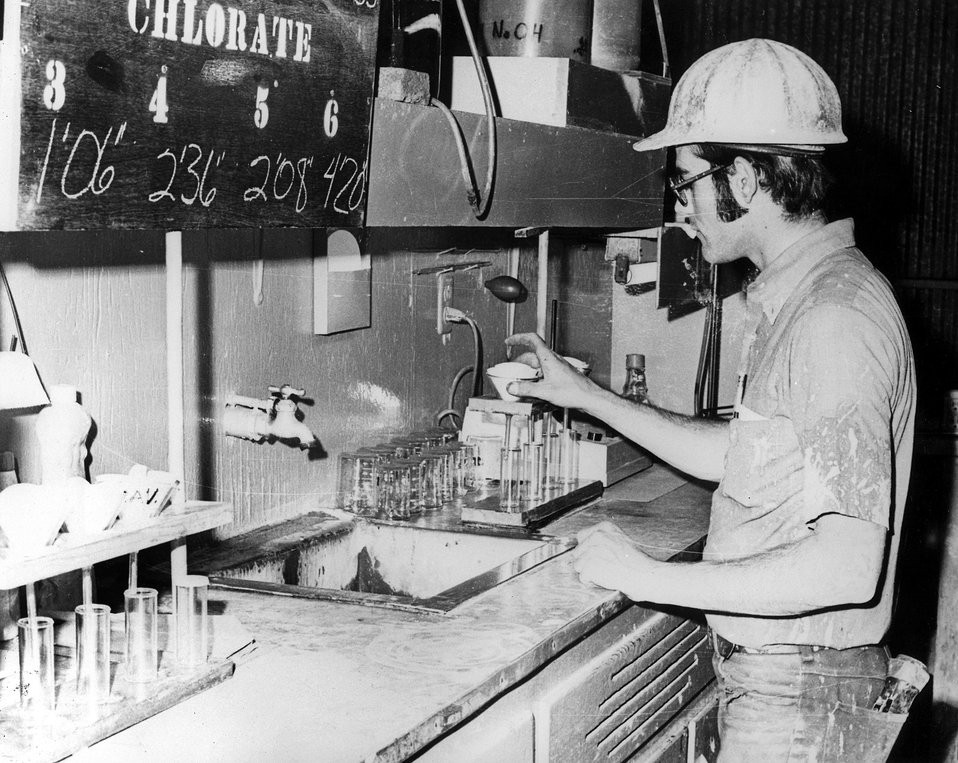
Testing is a continuous process in the Federal-American Partners uranium mill at Gas Hills, Riverton, Wyoming. c. 1976